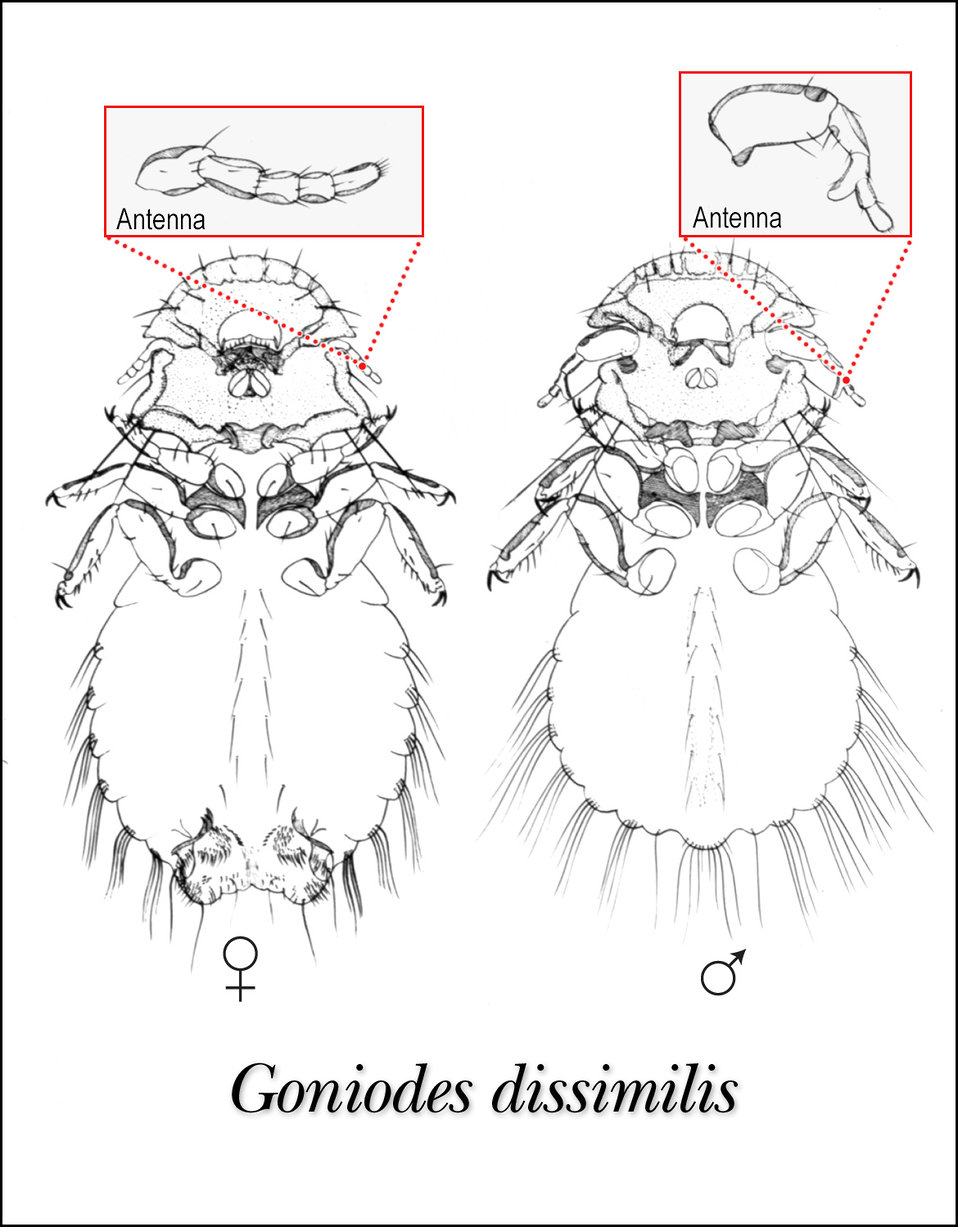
This illustration of female and male lice, Goniodes dissimilis shows the ventral aspect of this species.